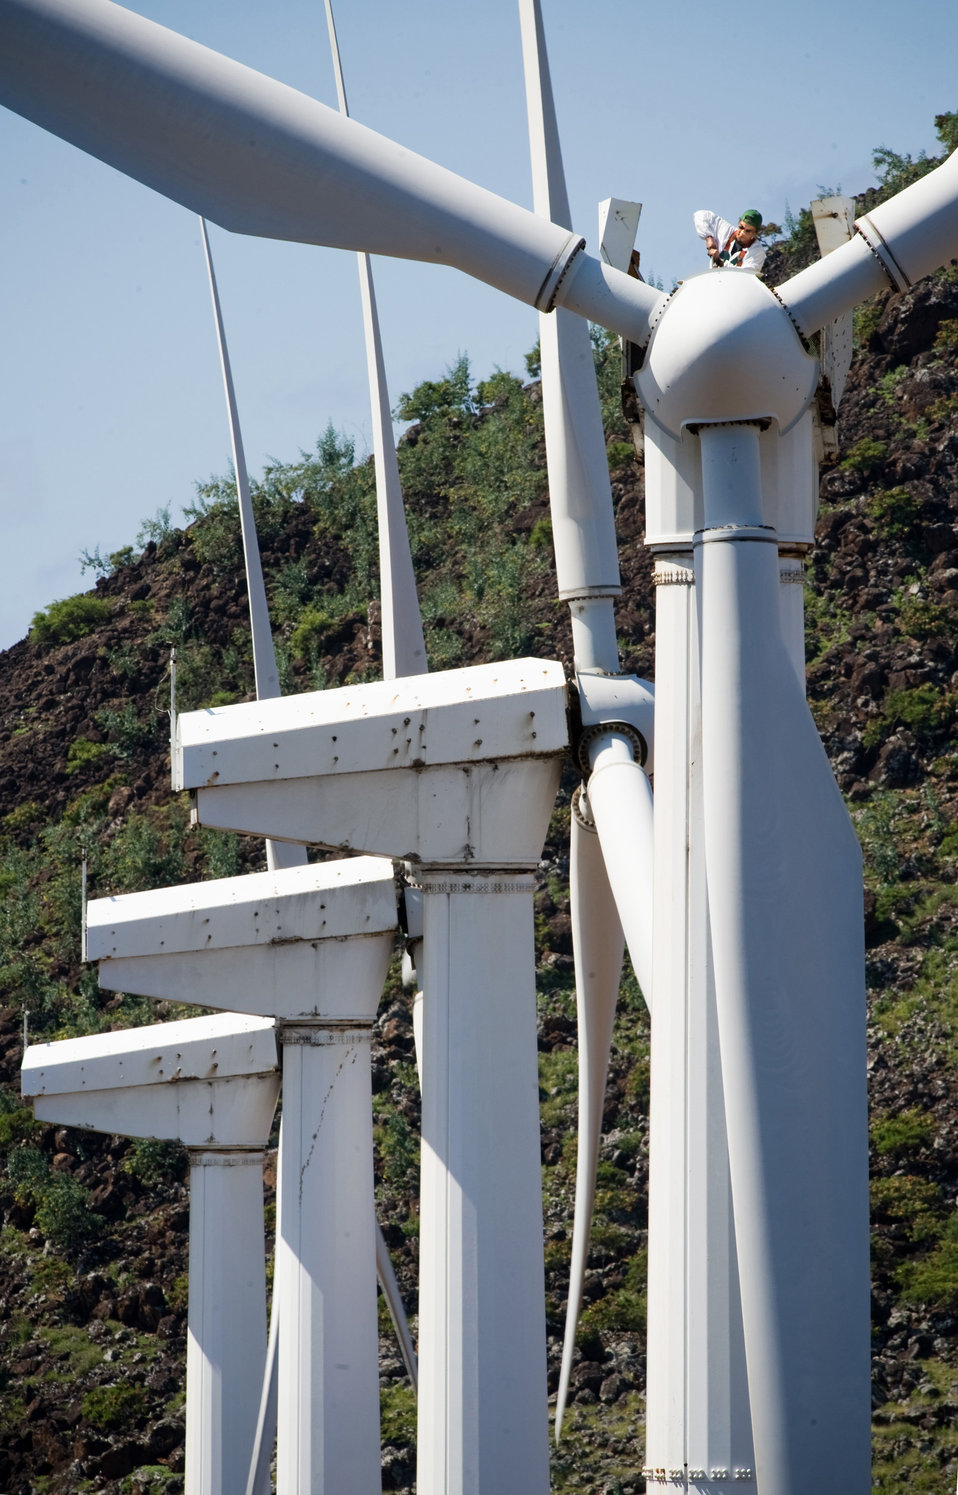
Win with Wind

Mr. Damien Cuello is more than 100-feet high as he inspects Wind Turbine#1 at 45th Operations Group Detachment 2, Ascension Auxiliary Airfield (AAF), South Atlantic Ocean. The power house operator/ mechanical associate is tethered and stands on the drive-line to also get parallel views of the other wind turbines. The rotor disk of three blades is more than 25 meters in diameter. Mr. Cuello is a Computer Sciences Raytheon contract associate in charge of maintenance for the 6-wind turbine facility. The wind turbines work in parallel with low-load diesel generators powering the airfield, Space Command sites and facilities, and a royal air force airfield facility on the island. Ascension AAF's award winning economical self-sufficiency solutions also includes drinking water production and waste water treatment. The mission of Det. 2 is support of eastern range space launches by collecting and disseminating radar, telemetry and tracking data. Ascension island is 35 square miles in a remote location midway between Brazil and Angola. The nearest country is Liberia - 1000 miles away.